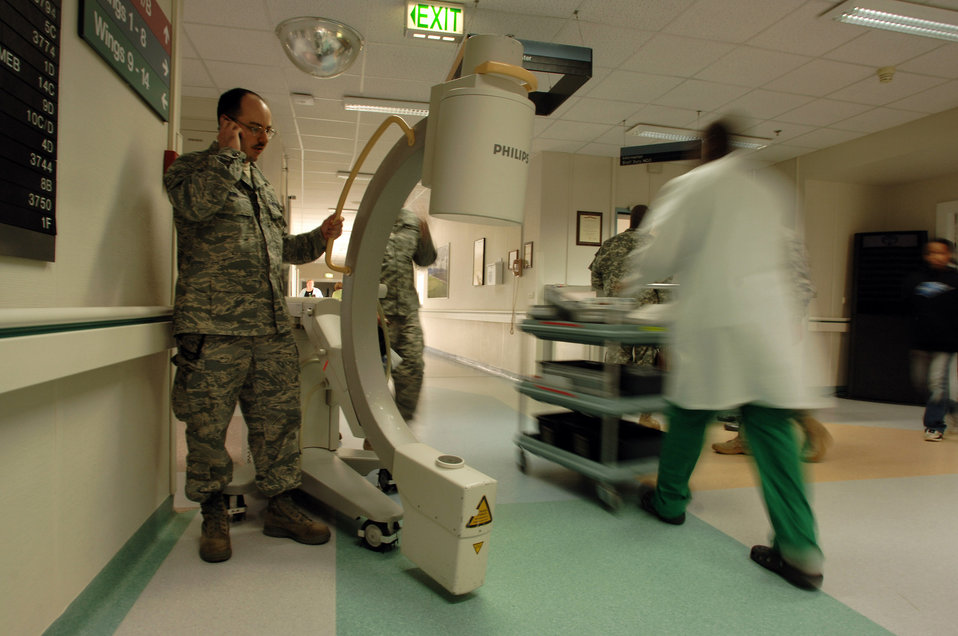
Next stop -- maintenance inspection

Staff Sgt. Christian Bond, a medical maintenance technician, takes a call while transporting a portable X-ray machine to a maintenance inspection at Landstuhl Regional Medical Center, Germany. A 27-member joint team is responsible for 33,000 pieces of medical equipment throughout the European Command.